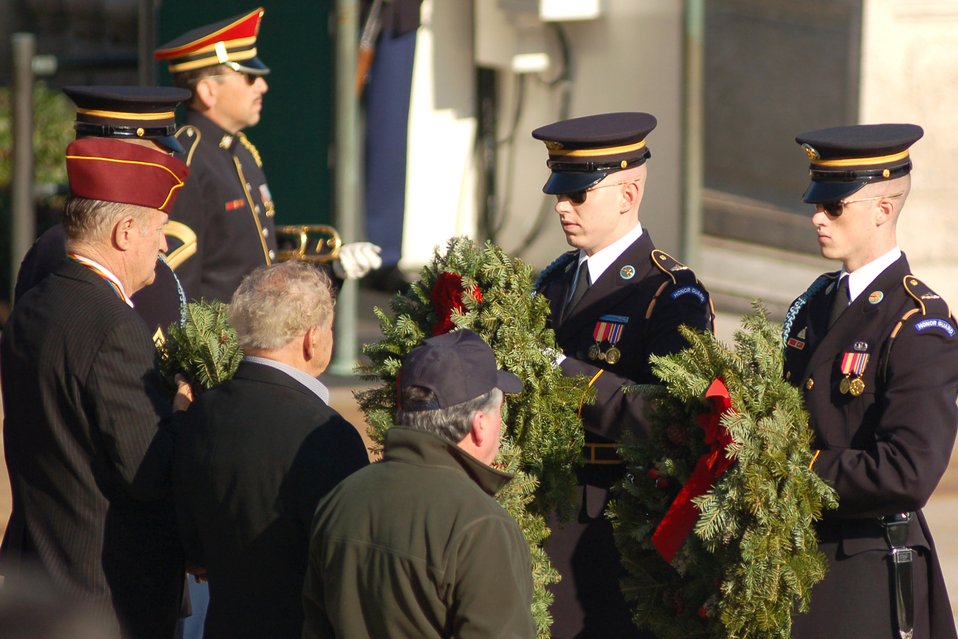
Not forgotten

Two Soldiers receive wreaths to lay at the Tomb of the Unknown Soldier Dec. 14 in Arlington National Cemetery in Virginia. The Soldiers laid four wreaths at the tomb in an official ceremony.